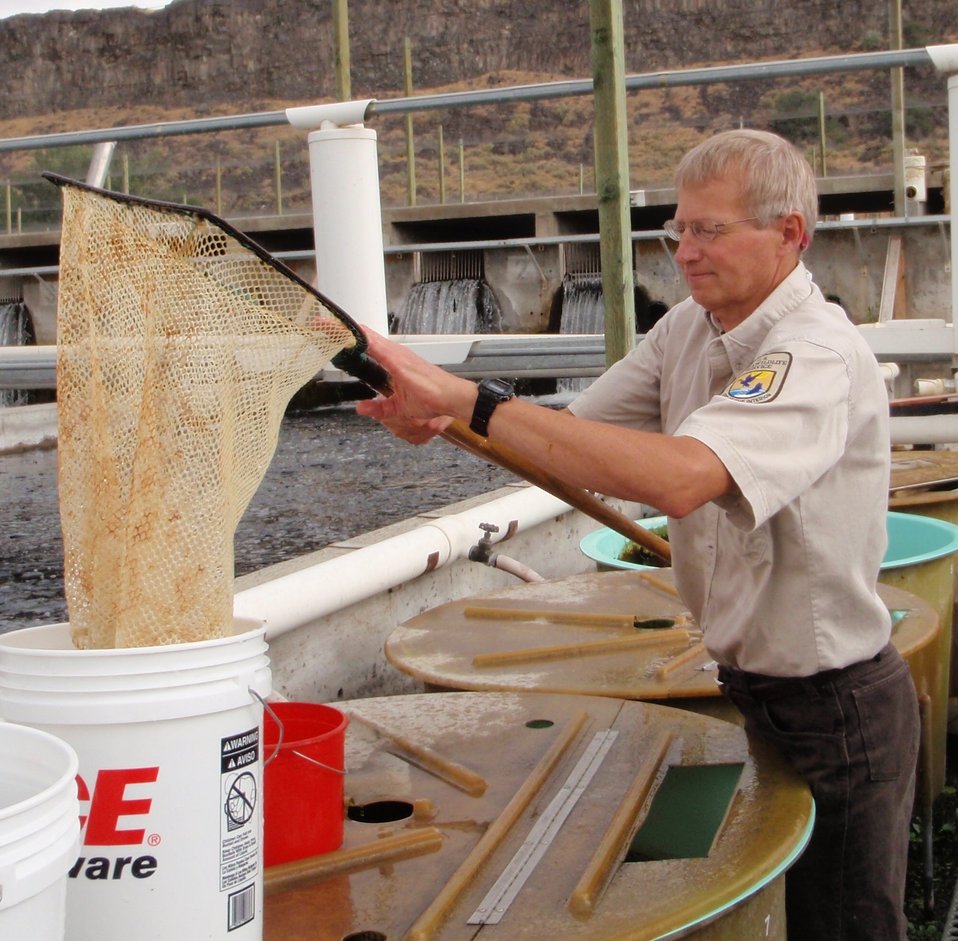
Dan Carty collecting rainbow trout from raceways at the end of a field study at Clear Springs.

Rachel Carson Award for Scientific Excellence (Group) – 2013